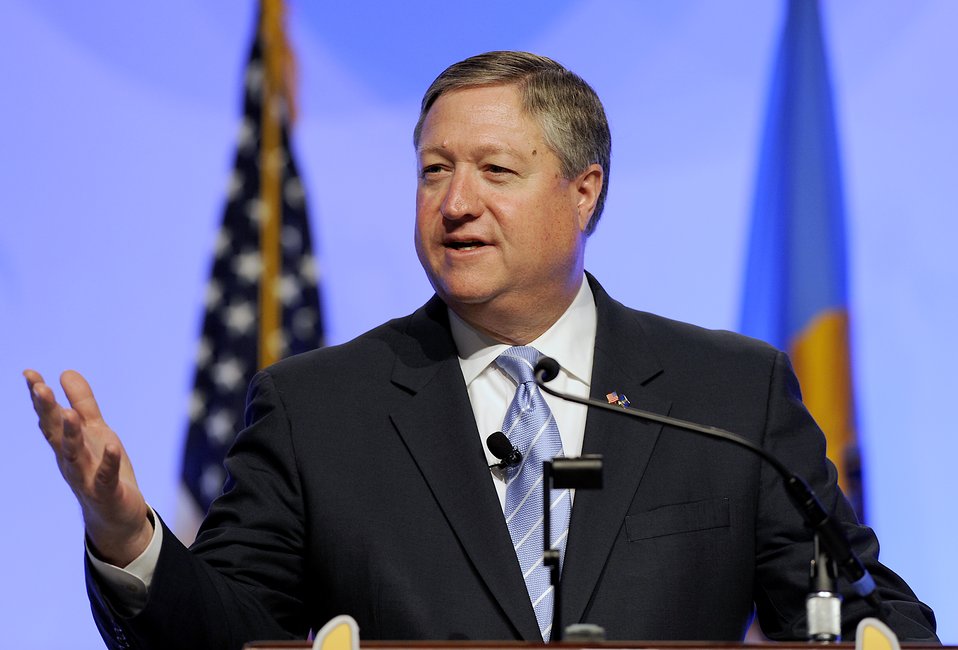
Secretary of the Air Force Micahel Donley

Secretary of the Air Force Michael Donley delivers remarks during the 2012 Air Force Association Air Warfare Symposium Feb. 24, 2012, in Orlando, Fla. In his speech, Donley addressed the importance of modernization in the Air Force's fiscal 13 budget proposal and out-year plans.